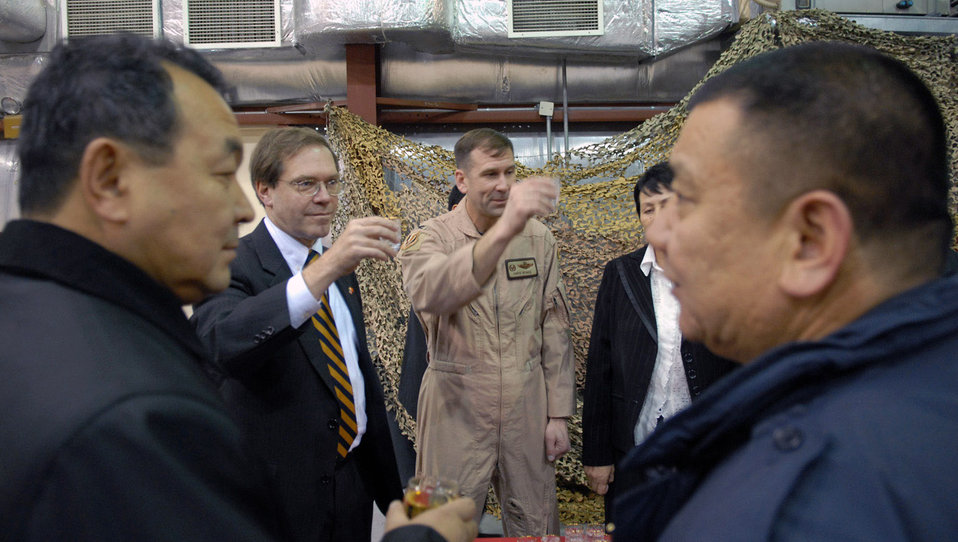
Kyrgyzstan parliament members visit Manas

Col. Christopher Bence and Lee Litzenberger offer a toast to members of the Kyrgyz parliament during a during a Dec. 15 visit to Manas Air Base, Kyrgyzstan. Colonel Bence is the 376th Air Expeditionary Wing commander, and Mr. Litzenberger is the deputy chief of mission at the U.S. Embassy to Kyrgyzstan.